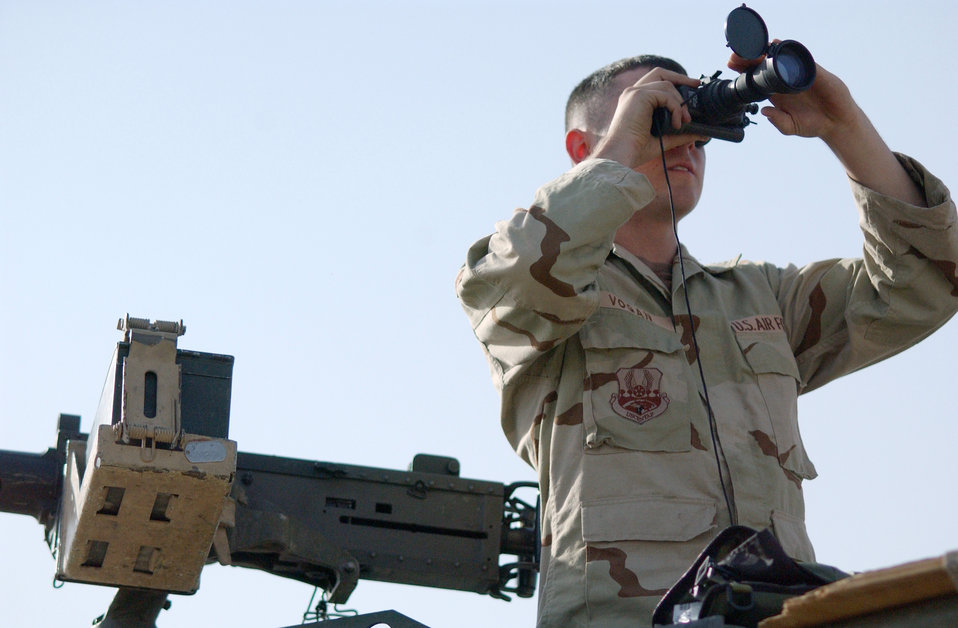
Despite danger, convoy Airmen keep on trucking

MOSUL, Iraq -- Airman 1st Class Adam Vogan inspects night-vision goggles before a convoy escort mission Sept. 22. Airman Vogan is a vehicle operator for Detachment 1 of the 732nd Expeditionary Logistics Readiness Squadron here. He is deployed from Eglin Air Force Base, Fla.